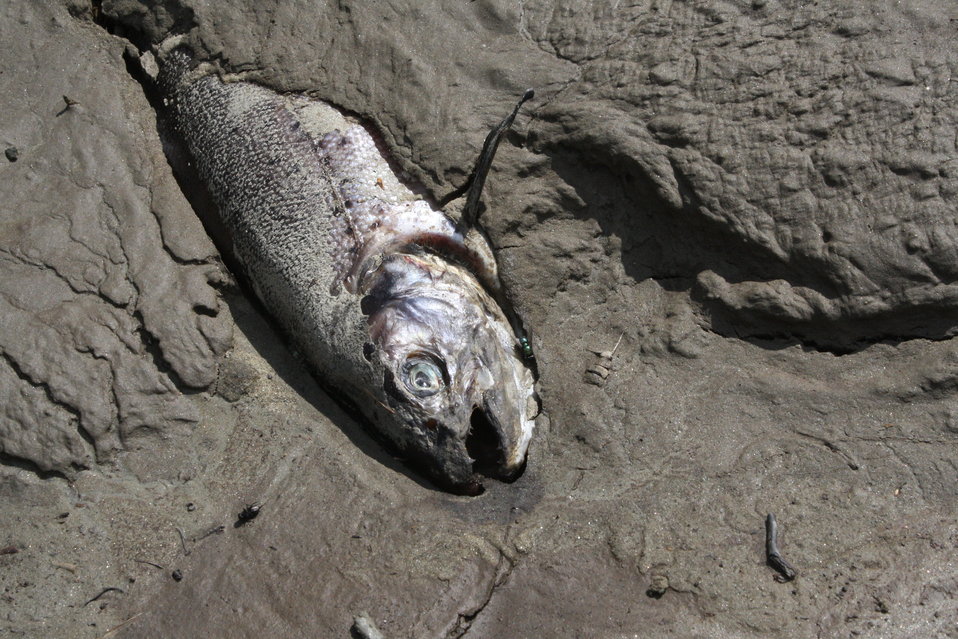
Some fish escaped and were left stranded by receding flood waters

High flood waters breached some circular fish rearing pools at White River National Fish Hatchery during Hurricane Irene. Some fish escaped, and were left stranded by receding flood waters.